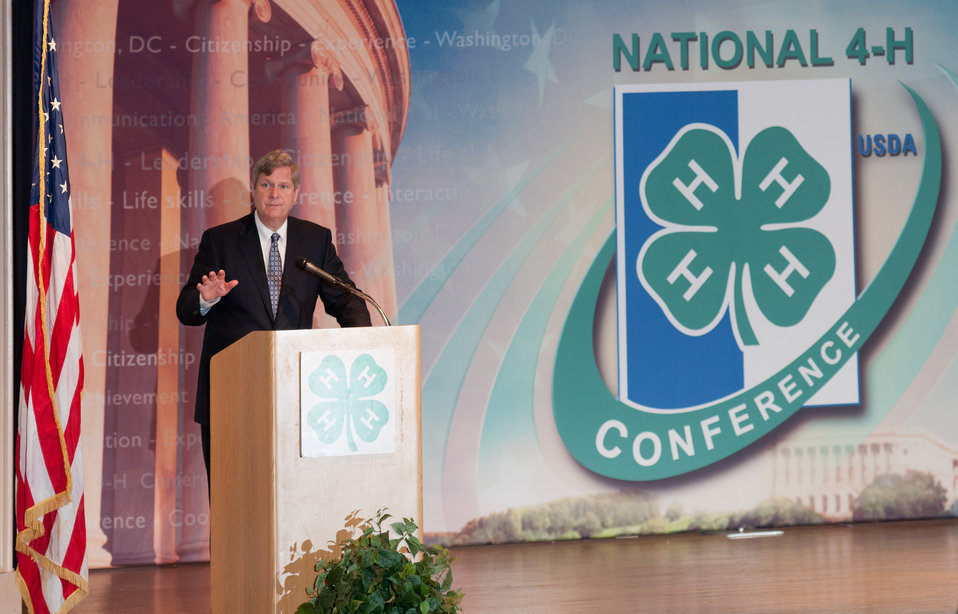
U.S. Department of Agriculture (USDA) Secretary Tom Vilsack delivers the keynote remarks to approximately 300 youth members, Extension Educators and 4-H Adult Volunteers from across the nation, as well as U.S. Territories at the 2013 National 4-H Conference, on Monday, April 8, 2013 in Chevy Chase, MD. Also speaking at the event is Agriculture Departmental Management Office of Advocacy and Outreach Director Carolyn Parker and National Institute of Food and Agriculture Director Dr. Sonny Ramaswamy. The youth delegates are in grades 10-12 (15-19 years old). The purpose of the conference is to 1) engage 4-H youth in personal development experiences that will increase knowledge, resources, and skills; 2) discuss topics affecting youth and 4-H programming nationwide; and 3) empower and mobilize 4-H youth to create positive social change in their communities in a meaningful and genuine way. The conference also reinforces the rich history of 4-H and its valuable tie to USDA, Cooperative Extension and the Land-Grant University System.